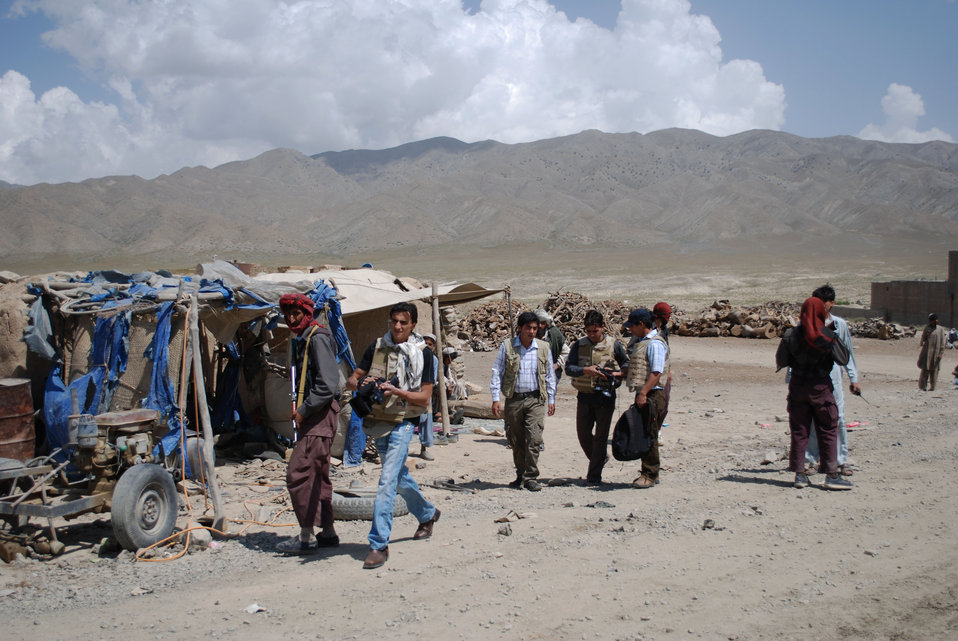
'On the Road' in Paktya Province